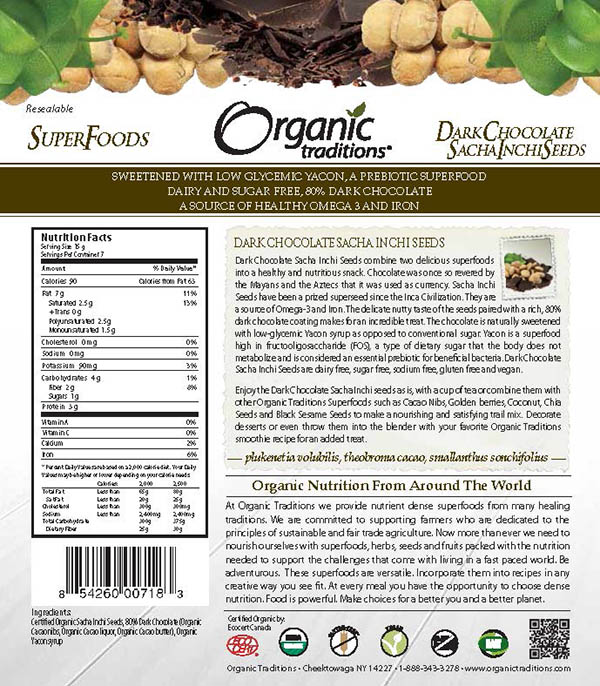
RECALLED – Candy

April 14, 2014 – Product Recall – Health Matters America Inc. Issues Allergy Alert on Undeclared Milk in Organic Traditions Brand Dark Chocolate Golden Berries and Dark Chocolate Sacha Inchi Seeds.